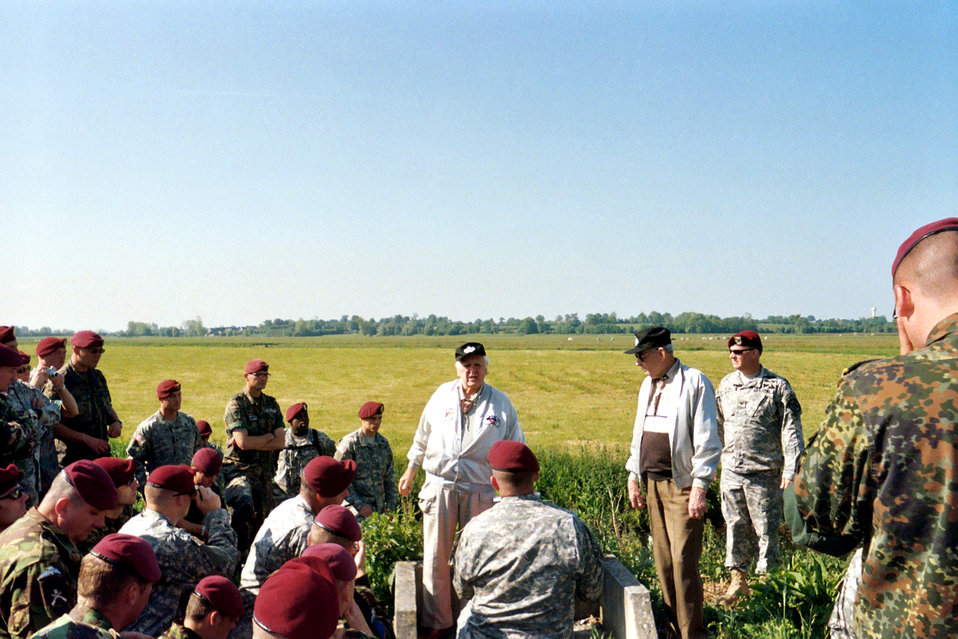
Parachute drop brings appreciation for freedom

Two of the paratroopers from the D-Day invasion on June 6, 1944, talk to 150 paratroopers from the U.S., France, Britain, Canada and Germany about their experience 62 years earlier in Normandy, France. The younger paratroopers were participating in the 62nd anniversary observance of the D-Day invasion.